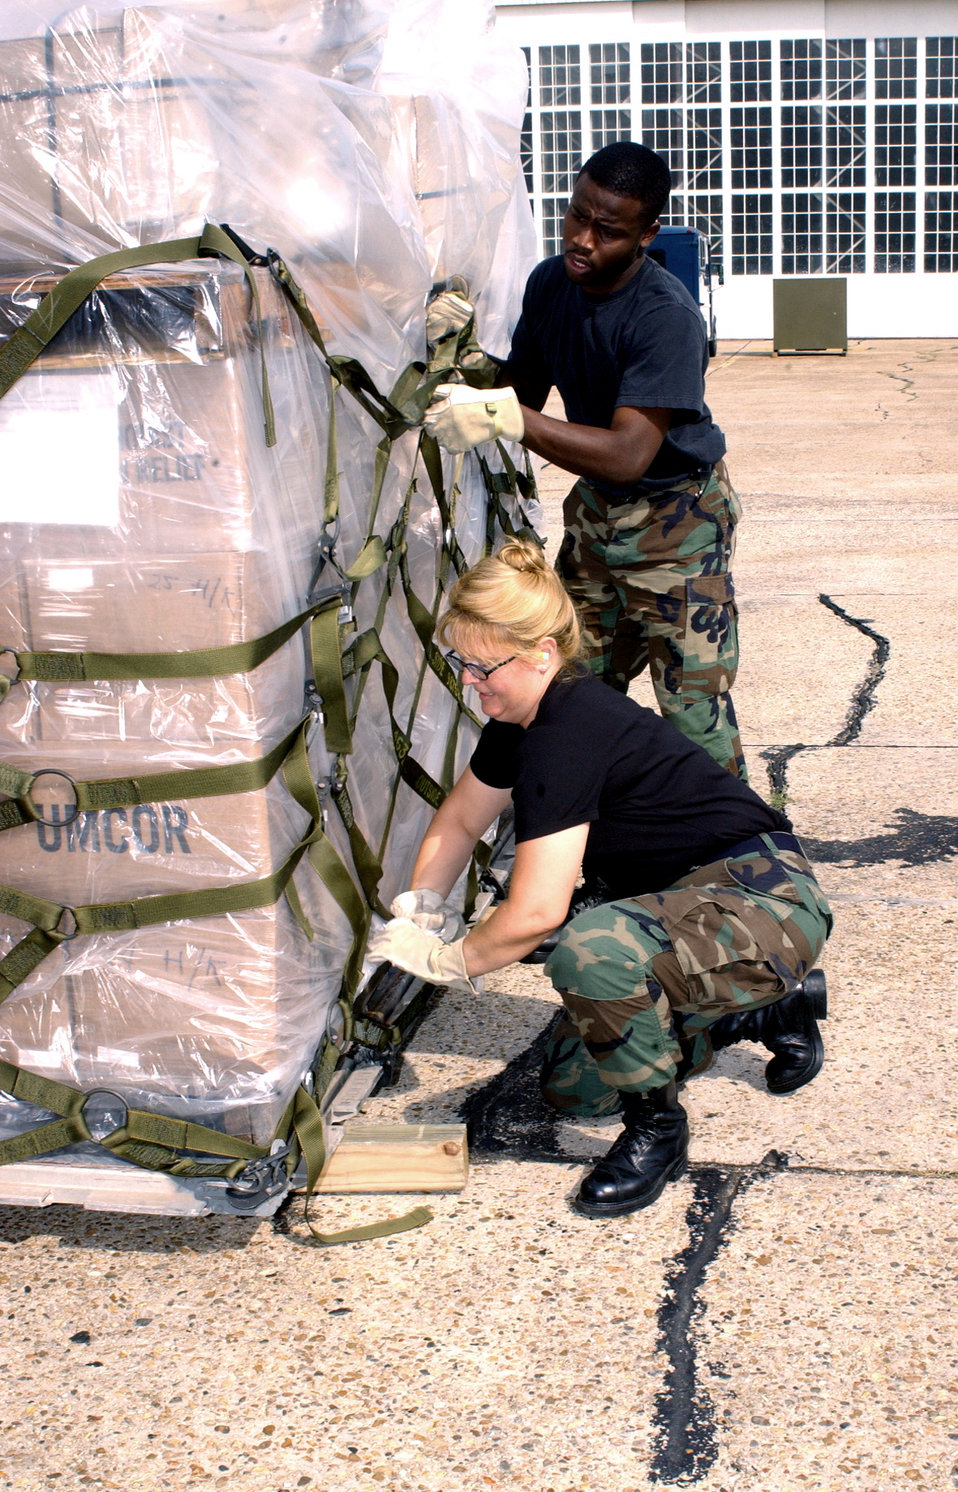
Keesler Airmen send aid to Afghanistan

KEESLER AIR FORCE BASE, Miss. -- Tech. Sgt. Sydney Dyche (foreground) and Airman 1st Class Rudolph Richards secure netting on a pallet of humanitarian aid goods bound for Afghanistan. Sergeant Dyche is assigned to the 81st Medical Support Squadron, and Airman Richards is from the 81st Mission Support Squadron.